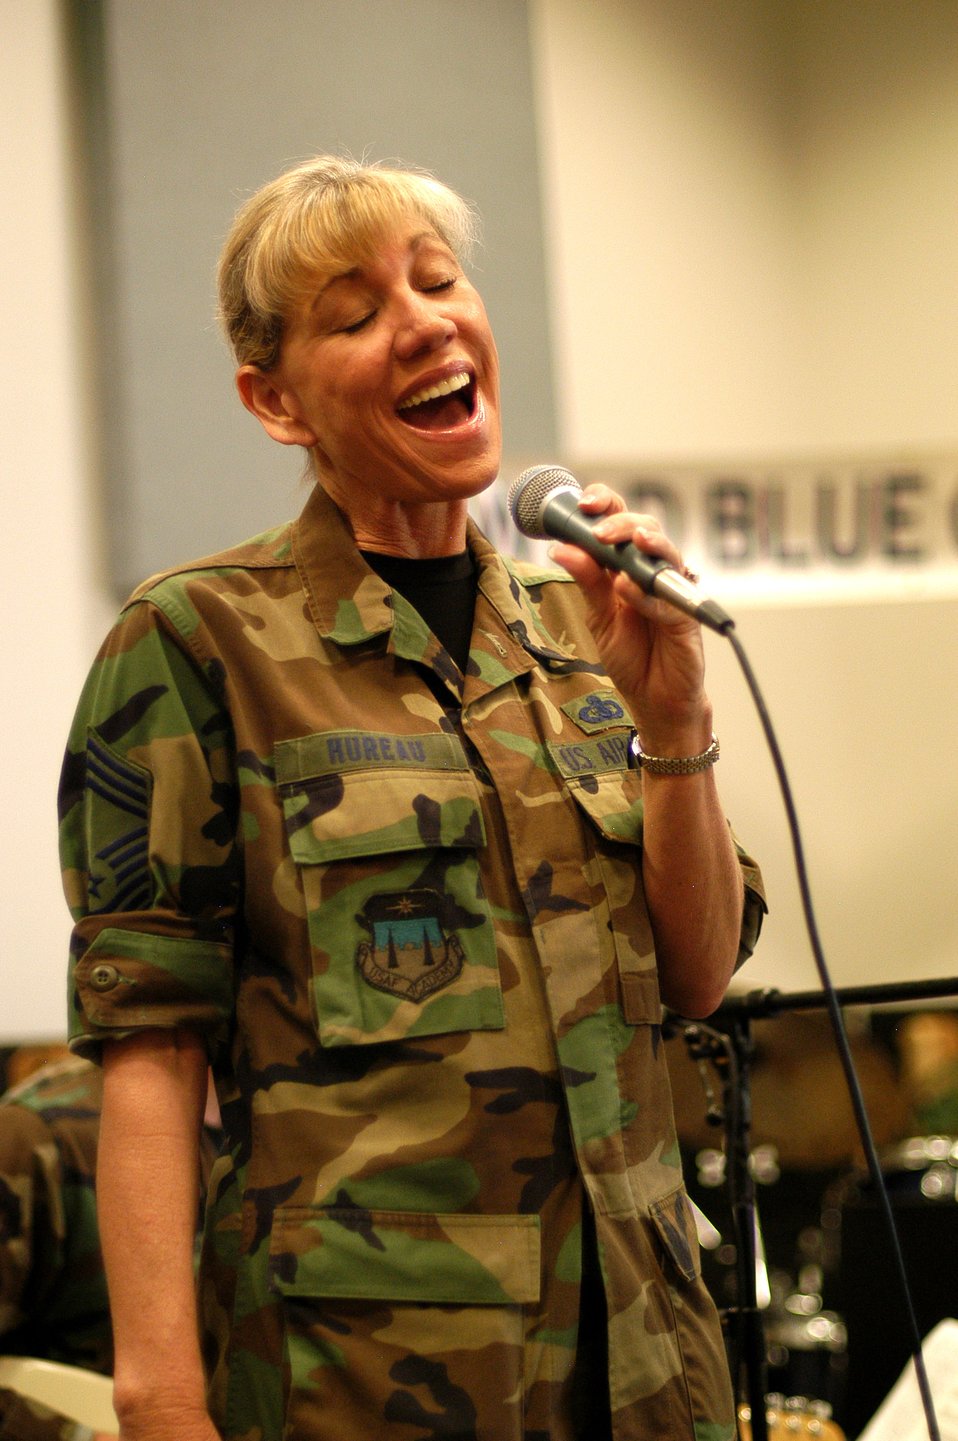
Wild Blue Country headed yonder

Lead singer Chief Master Sgt. Marcelle Hureau of Wild Blue Country rehearses for an upcoming deployment to the Middle East. The group is bringing music to several forward operating bases that have not had live entertainment.